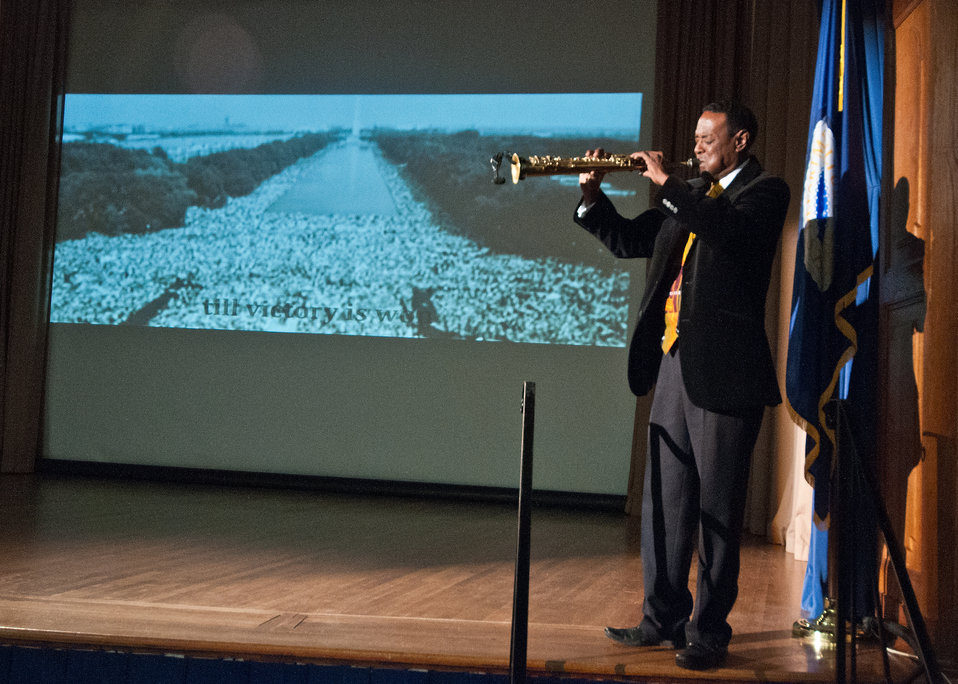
J. Plunky Branch of the Afro-Funk Jazz Group, “Plunky and Oneness” performs a saxophone solo of The Negro National Anthem at the National Service Day and Martin Luther King Celebration in honor of Dr. Martin Luther King Jr.’s contributions to the Civil Rights Movement at the United States Department of Agriculture in Washington, D.C., on Thursday, January 12, 2012.